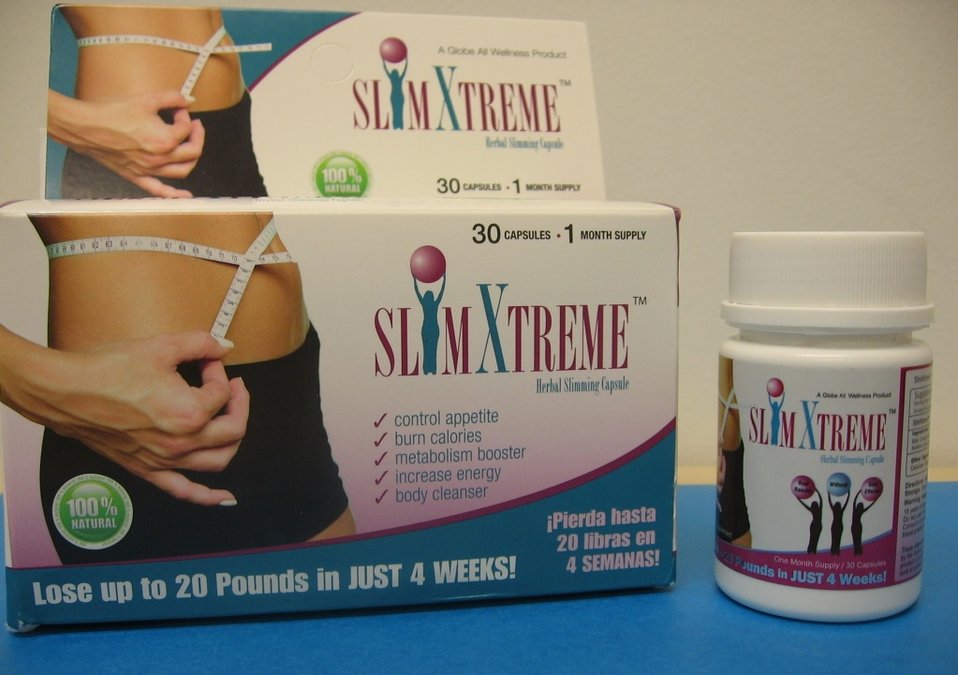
Slim Xtreme

February 4, 2014 - The FDA is advising consumers not to purchase or use Slim Xtreme, a product promoted and sold as a dietary supplement for weight loss. The product was found to contain undeclared sibutramine and/or phenolphthalein.